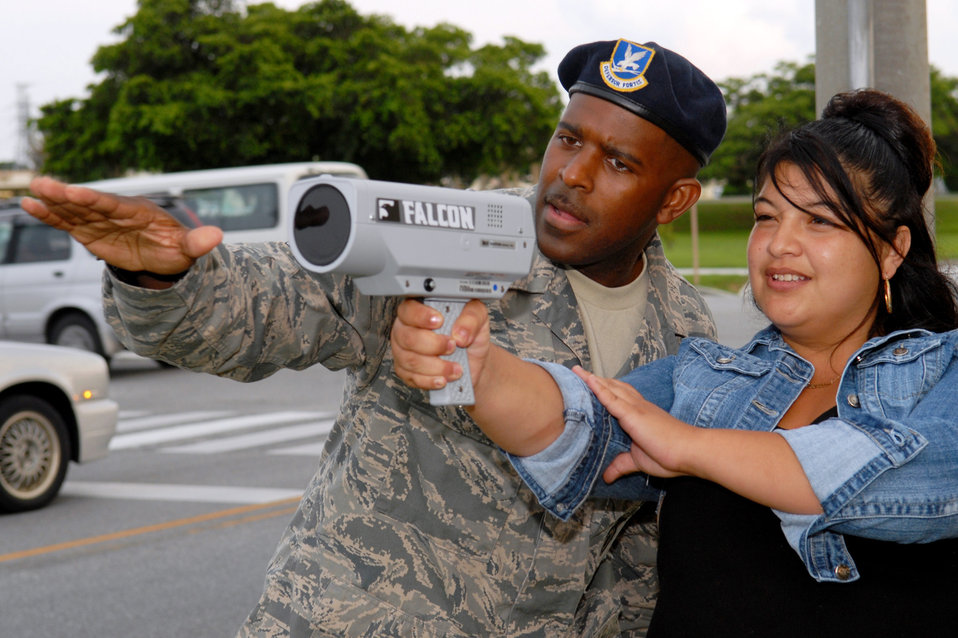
Spouses get taste of security forces' life

Tech. Sgt. Ronald Keeve instructs Army spouse Vanessa Chavez on the use of a speed detecting radar gun during the civilian police academy course May 27 at Kadena Air Base, Japan. Sergeant Keeve is a member of the 18th Security Forces Squadron.